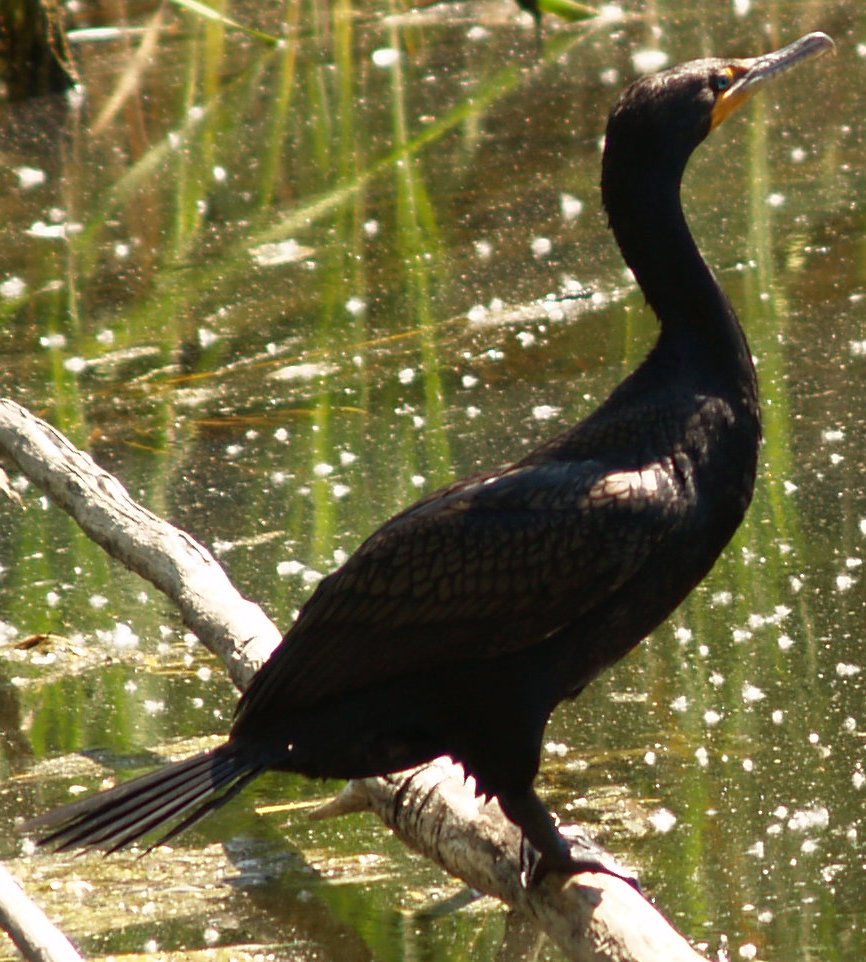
Cormorant